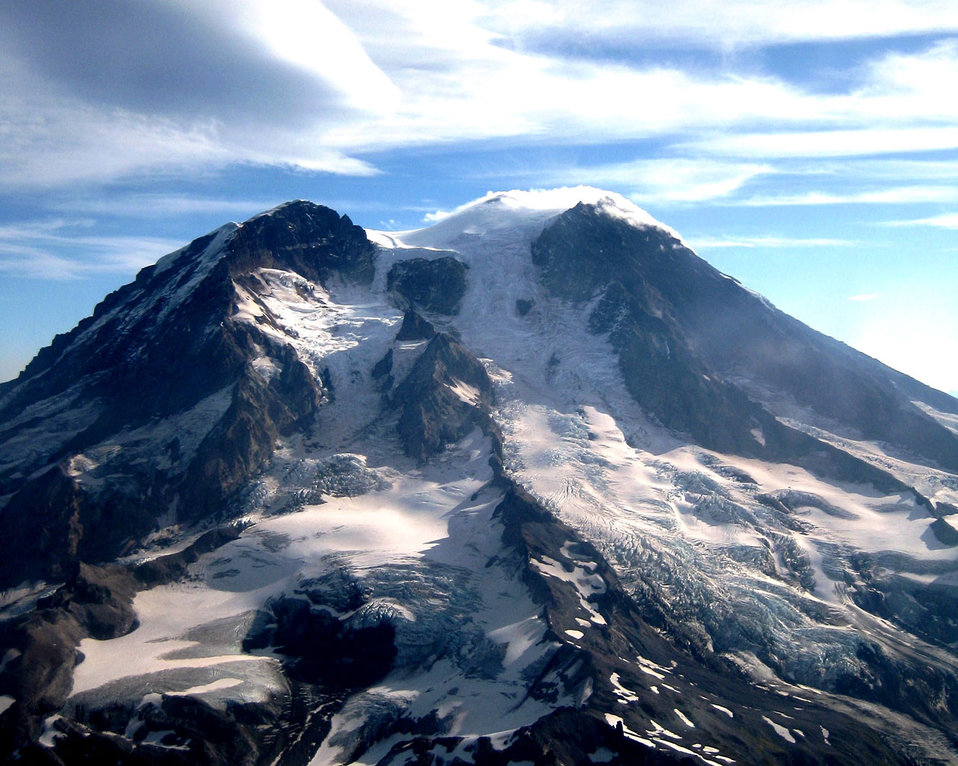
Mount rainier peak

The peak of mount rainier as seen through a chinook window.